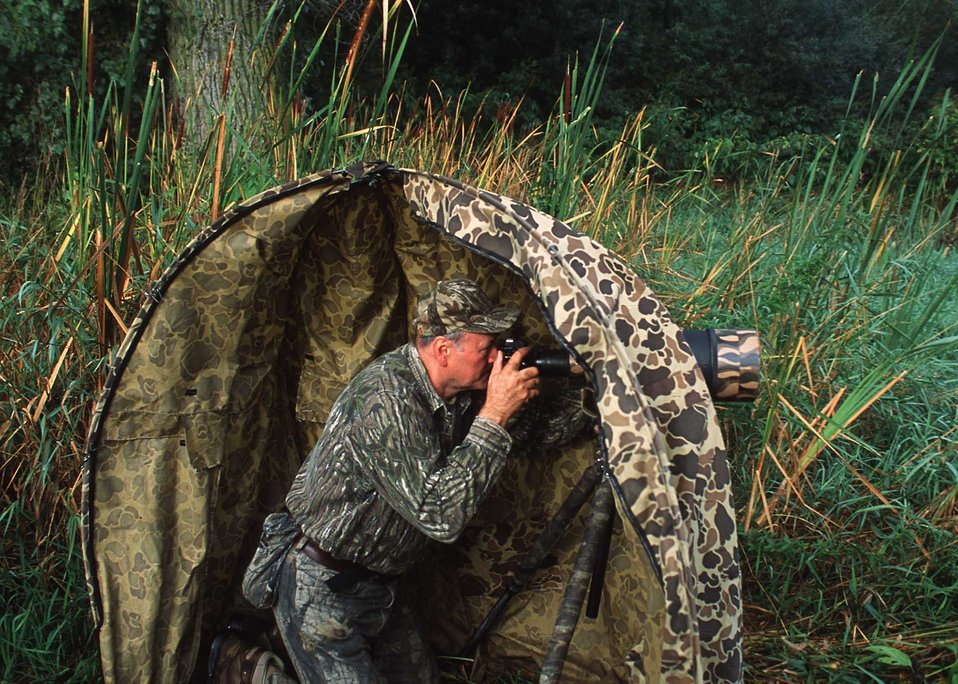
A wetland area and conservation buffer make for excellent wildlife and wildlife photography along Bear Creek in central Iowa.